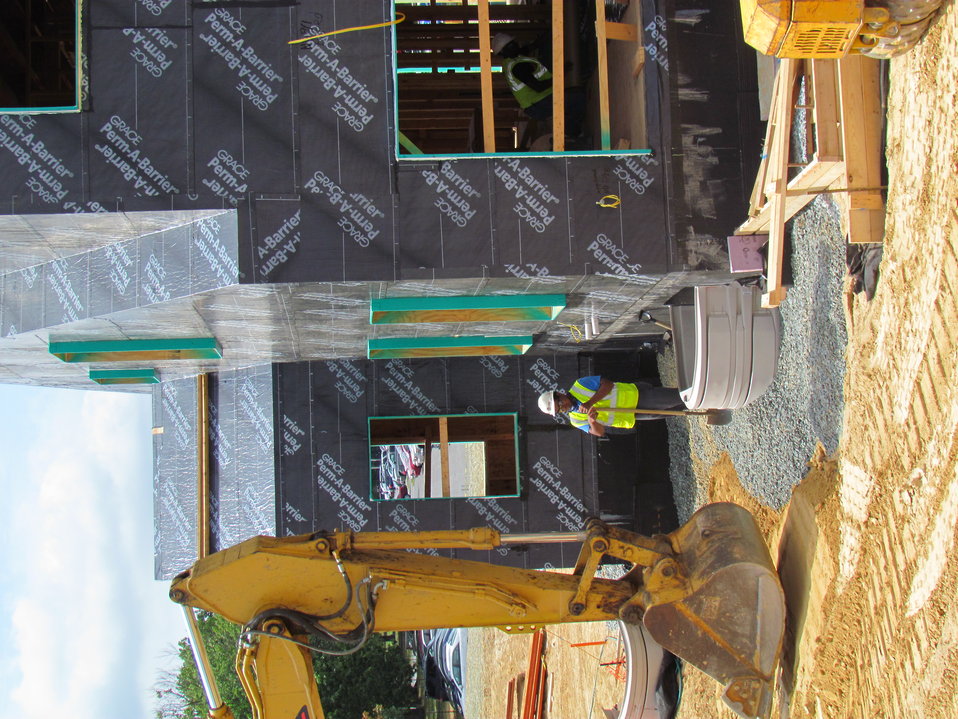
Net-Zero Energy Residential Test Facility - Workmen finishing window well installation on east side of facility.